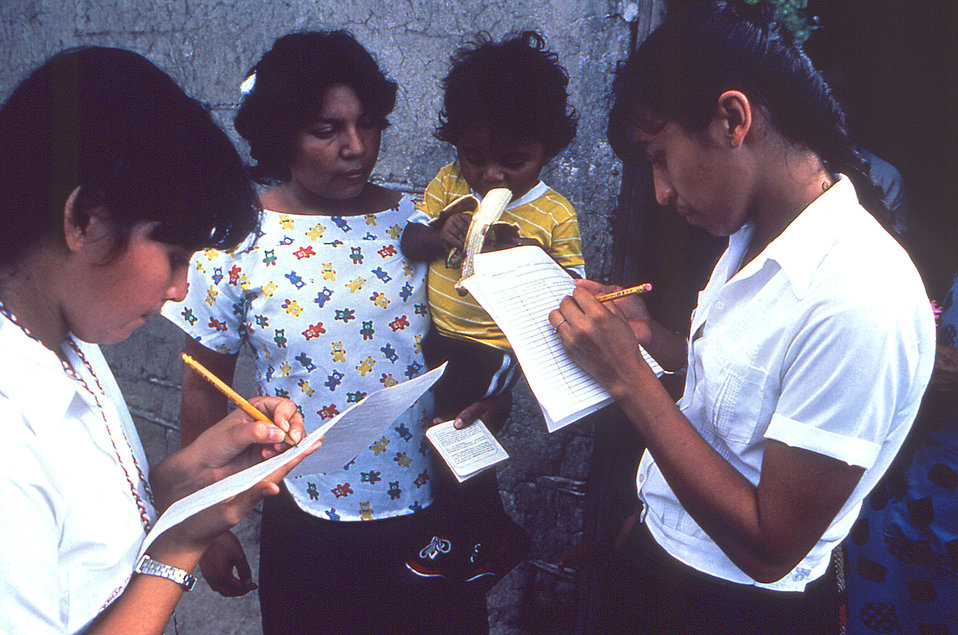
This 1989 image depicts two healthcare workers who were going door to door, conducting epidemiologically-related interviews in order to find out whether or not the appropriate polio vaccine had been administered to both the children, and adults of each visited household, in order to prevent them from acquiring poliomyelitis. If not, the vaccine would subsequently be administered to those unvaccinated household members.